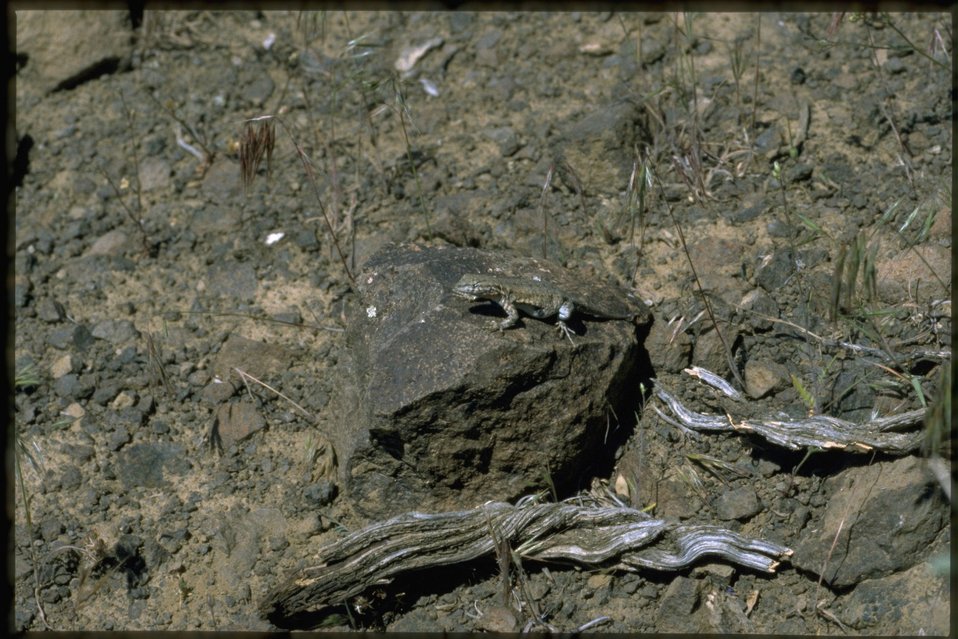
Farshot of lizard resting on a rock.